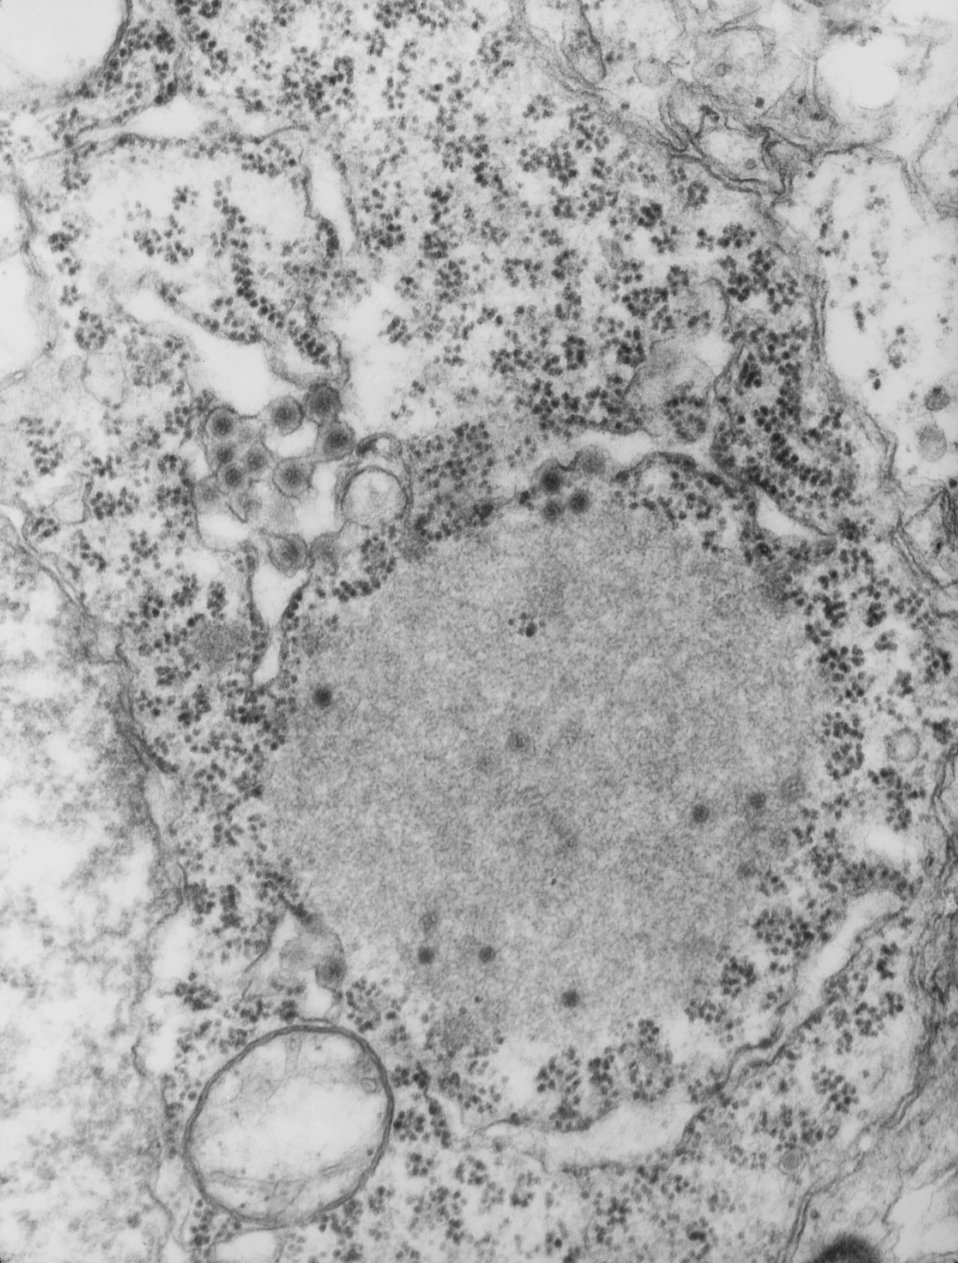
This transmission electron micrograph (TEM) revealed some of the morphologic details displayed by the Colorado tick fever virus (CTFV), a member of the genus Coltivirus, one of nine genera of the virus family known as the Reoviridae. Coltivirus particles are �80 nm in diameter and have a core �50 nm in diameter. Electron microscopic studies have shown particles with a relatively smooth capsomeric surface structure, and icosahedral symmetry.